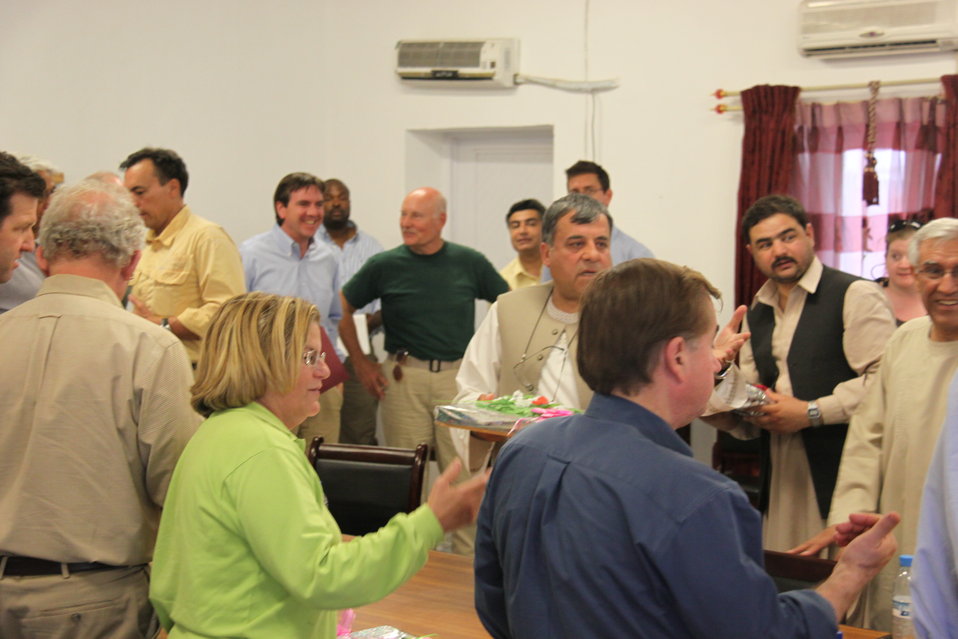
Meeting with Local Leaders in Kandahar